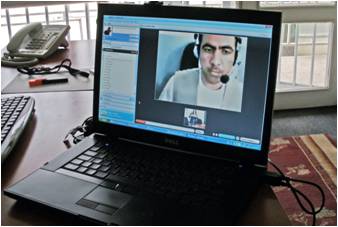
USAID Training Keeps Power Going

In April 2010, a truck laden with explosives crashed into a guesthouse occupied by project staff supporting USAID in Kandahar City. The ensuing explosion also threatened a program that is critically important to USAID’s Afghanistan Infrastructure and Rehabilitation Program (AIRP) and the effort to provide stable electricity to the people of Kandahar and surrounding areas.

“All of the expats were evacuated,” said AIRP’s Kandahar Diesel Power Plant Manager, a native of Kandahar City. “For two or three weeks, we were totally on our own with no technical advice. Yet the plant must still run.” Afghan trainees stepped into the breach, keeping the generators operating to supply power to five cities and more than 94,000 families.

Prior to the attack, Afghan trainees received one-on-one training, much of it to learn to repair damaged generators and overhaul equipment. Now they had to learn to manage and to report daily assessments of electrical service.

“Everybody’s role changed,” said the Plant Manager. “The former finance trainee had to learn to be a diesel mechanic. An equipment operator is working as a manager.”

When the first technical advisor returned to Afghanistan after the attack, he could not go back to Kandahar. “We had been expanding the Afghan staff,” he said. “Suddenly, we went from spending an enormous amount of time working with them to nothing.”

Using a laptop video camera and voice-over-internet protocol, the advisor in Kabul and the Afghan staff in Kandahar set up an on-line “shadowing operation.” Training and support proceeded virtually.

In Kandahar, the USAID model of capacity building succeeded. Afghan workers took over and delivered greatly needed resources to improve people’s lives and to pave the way for Afghan leadership.